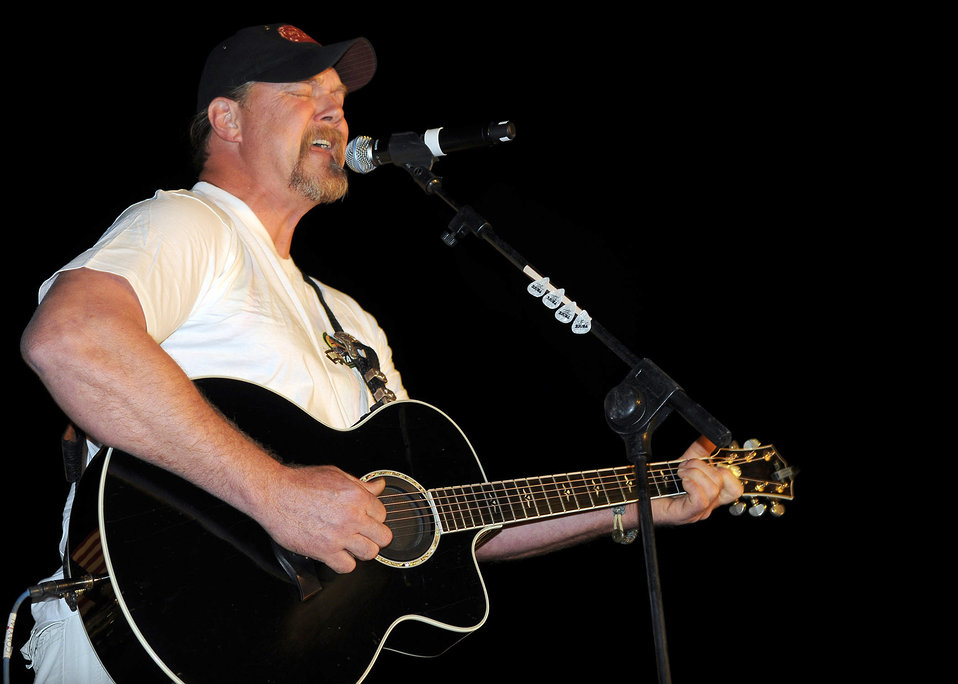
Trace Adkins

Country music artist Trace Adkins performs for servicemembers and civilians Nov. 2, 2010, at Joint Base Balad, Iraq, during his USO tour.